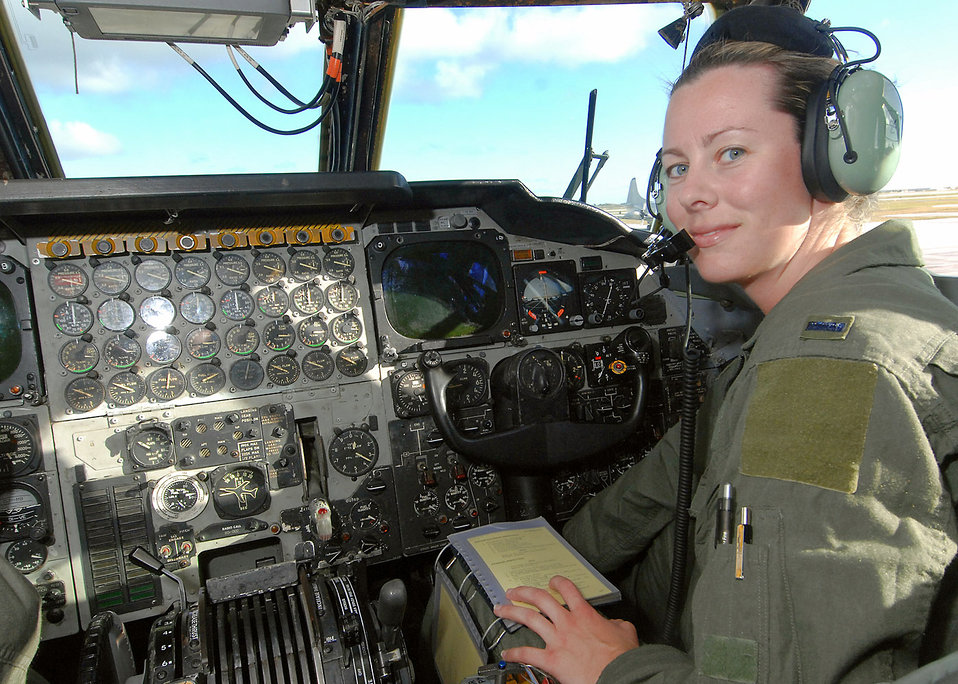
Women pilots: A weapon to be used

1st Lt. Nicola Hill does her pre-flight inspection before flying a 10-hour mission across the Pacific in a B-52 Stratofortress March 18 from Andersen Air Force Base, Guam. She and her fellow B-52 aircrew members practice techniques they would use in actual combat missions. Lieutenant Hill is a B-52 pilot from the 96th Expeditionary Bomb Squadron deployed from Barksdale AFB, La.